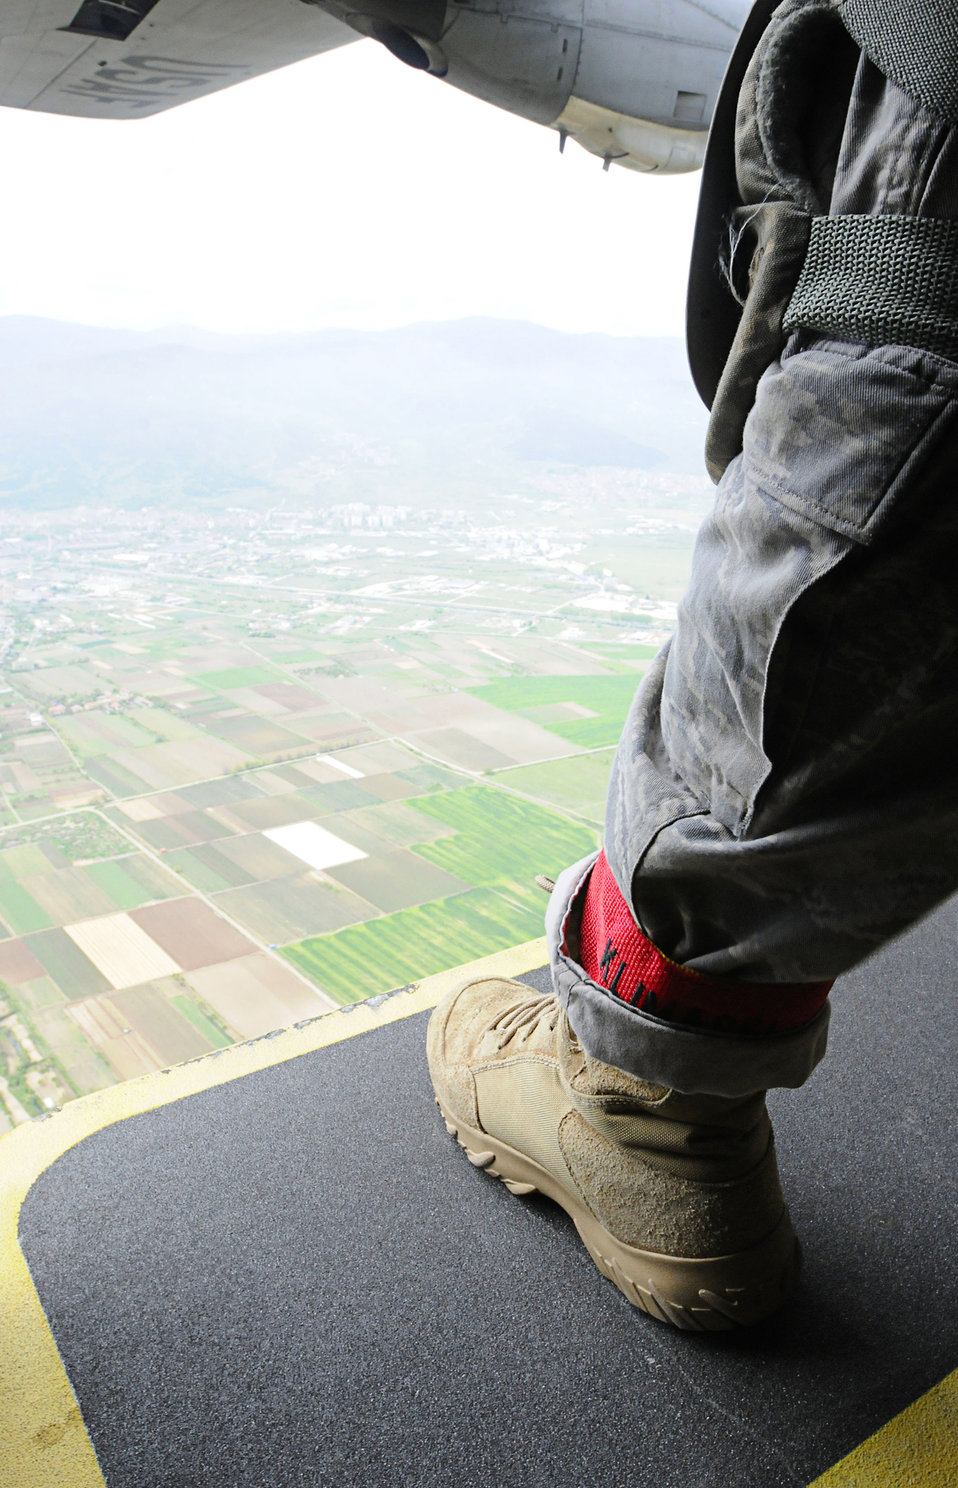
Thracian Spring 2011

Staff Sgt. Joseph Klimaski stands in a troop door of a C-130J Super Hercules in preparation of a static line jump April 29, 2011, during Thracian Spring 2011 in Plovdiv, Bulgaria. Sergeant Klimaski is an airborne planner assigned to the 435th Security Forces Squadron.